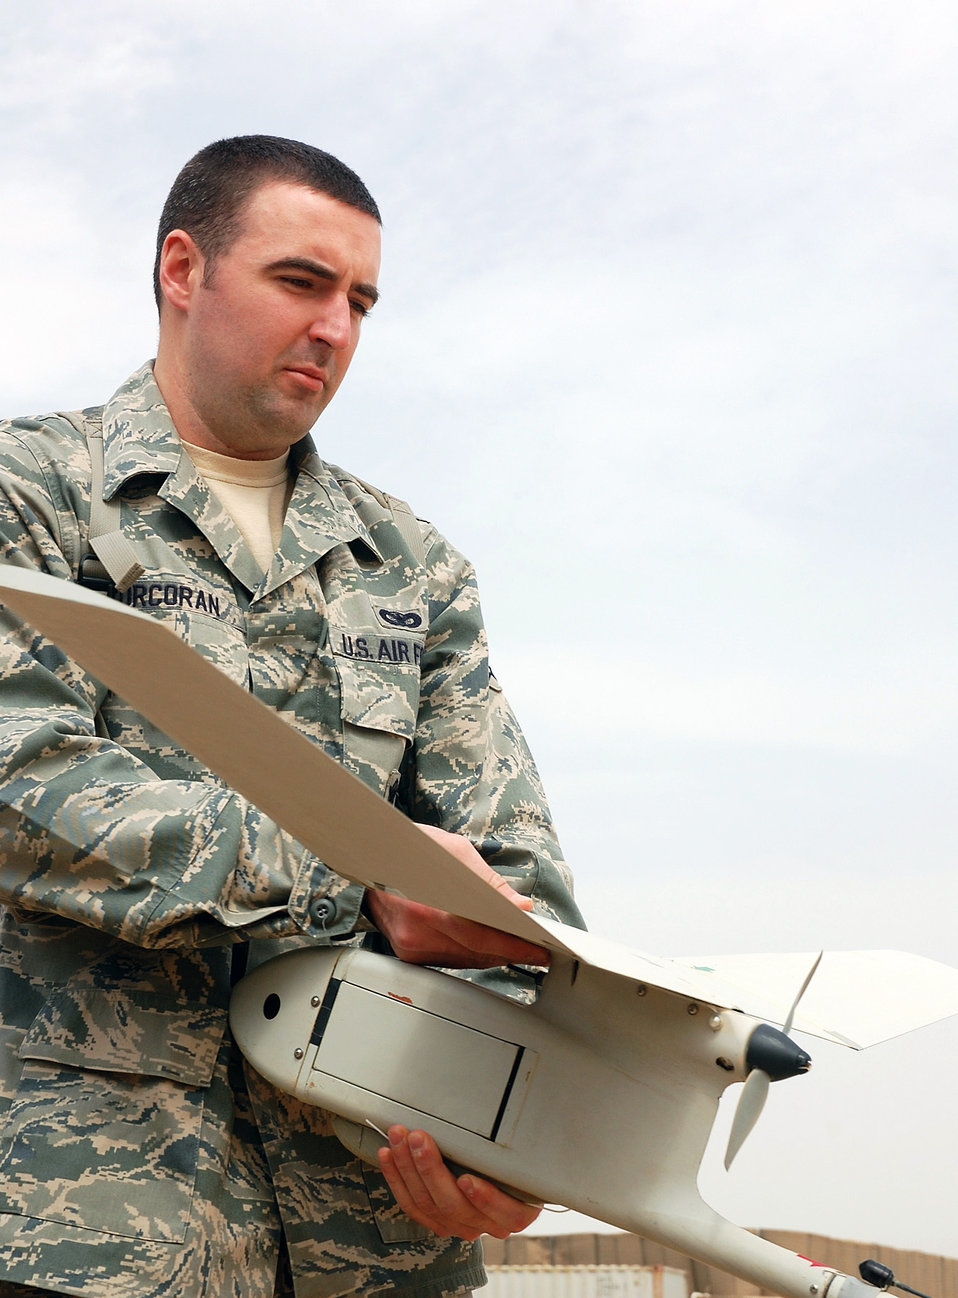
AF Raven B operators maintain 'eyes-on' for ground forces

Airman 1st Class Shane Corcoran holds an RQ-11B unmanned aircraft system during preflight checks Feb. 25. Airman Corcoran is an 887th Expeditionary Security Forces Squadron Raven B operator in Iraq.